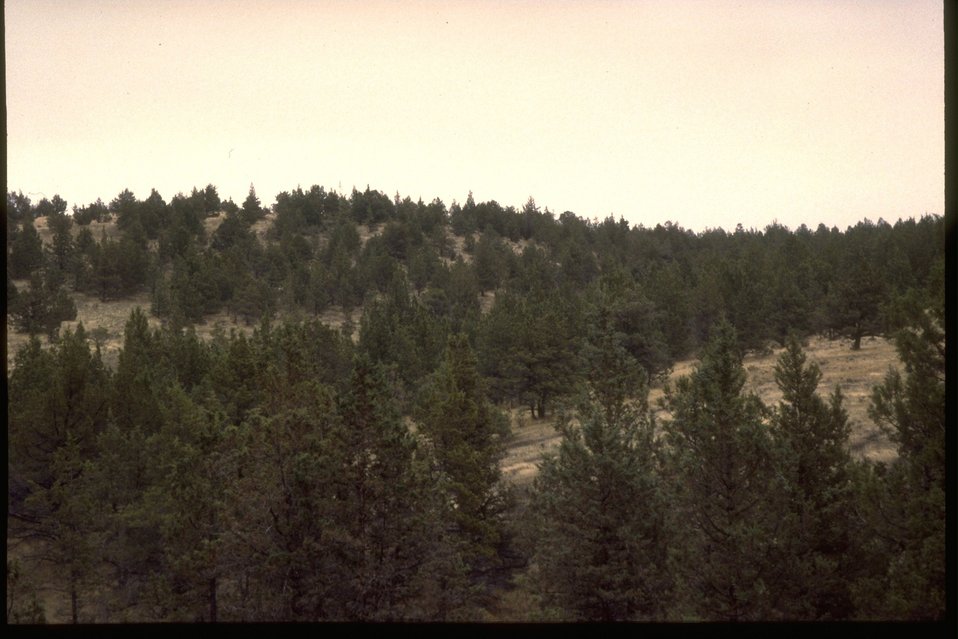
Juniper forest between Madras and Shaniko.